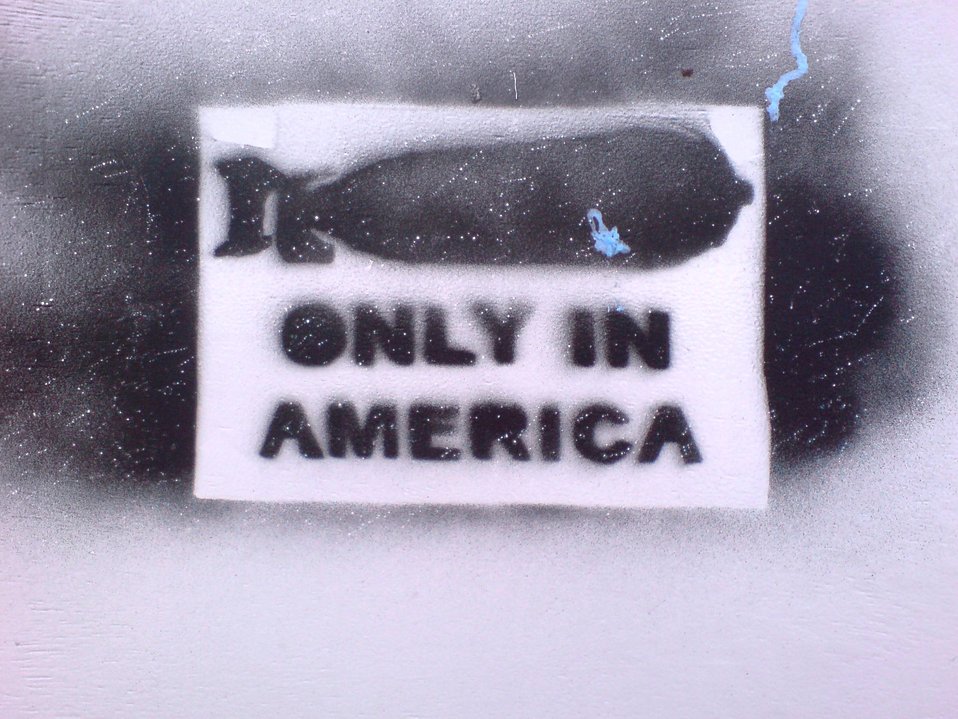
'Nuclear bomb - only in America' graffiti